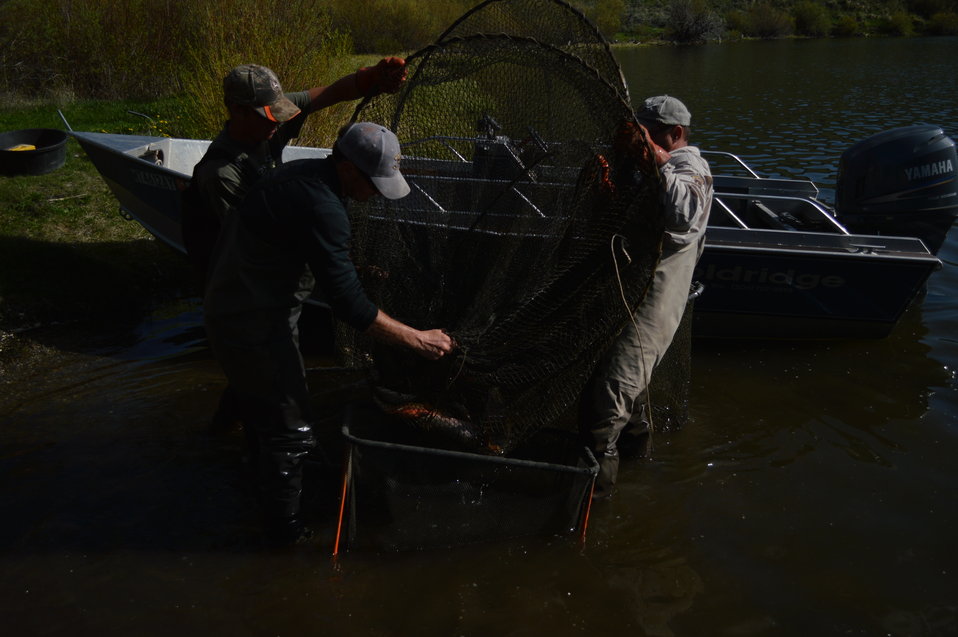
Regional Leadership Visit to Montana 2014